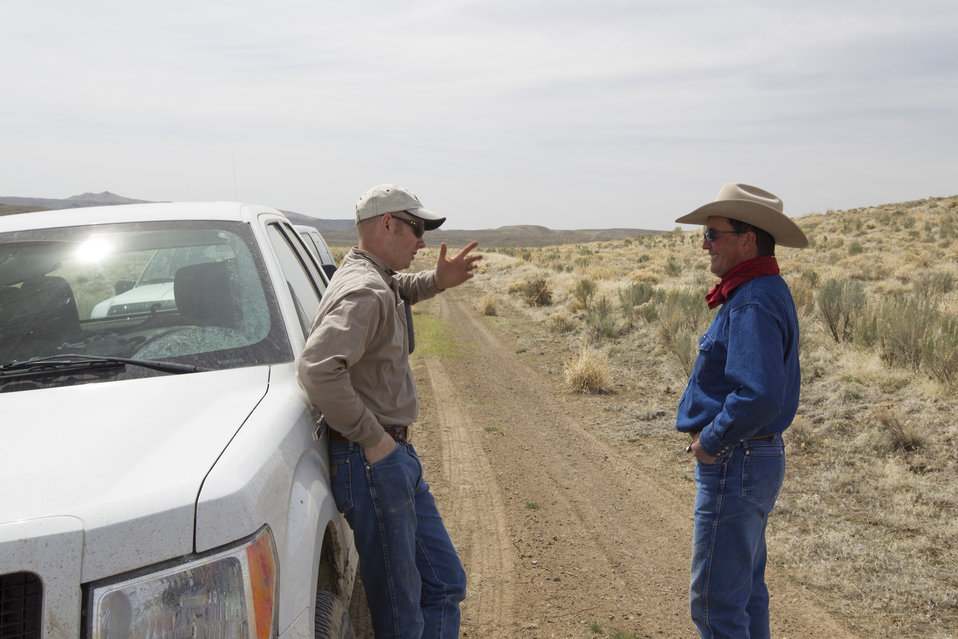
Landowner Meeting with Partners for Fish & Wildlife Program biologist